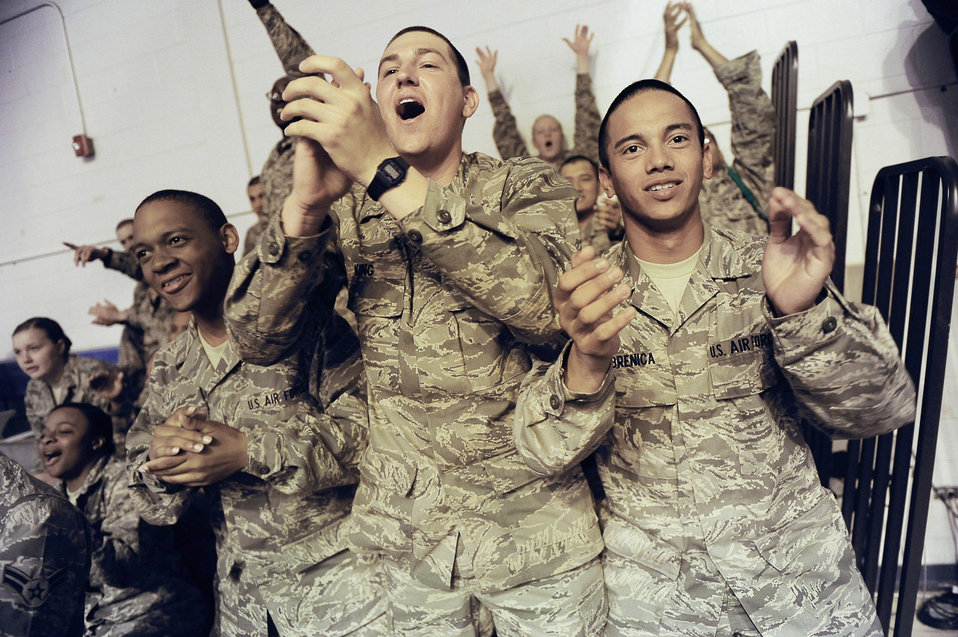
Contenders box for a spot

Airmen cheer on the contenders during the Air Force Boxing Championships April 4, 2010 at the Bennett Fitness Center at Lackland Air Force Base, Texas. Airmen competing for a spot on the Air Force boxing team displayed their talents in front of a live audience, at the same time being evaluated by the coaching staff.